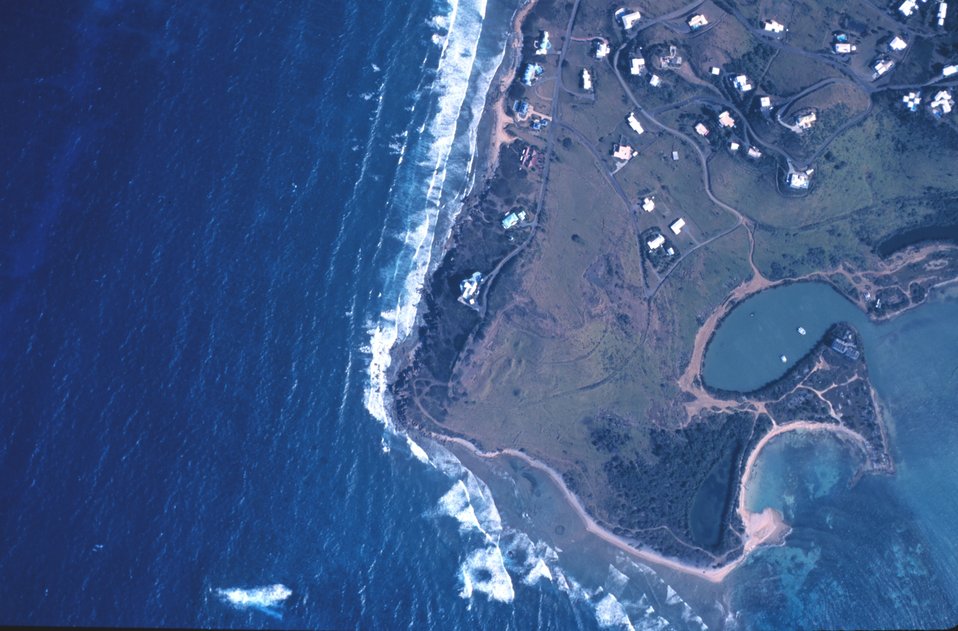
Aerial view of west side of Salt River Bay.